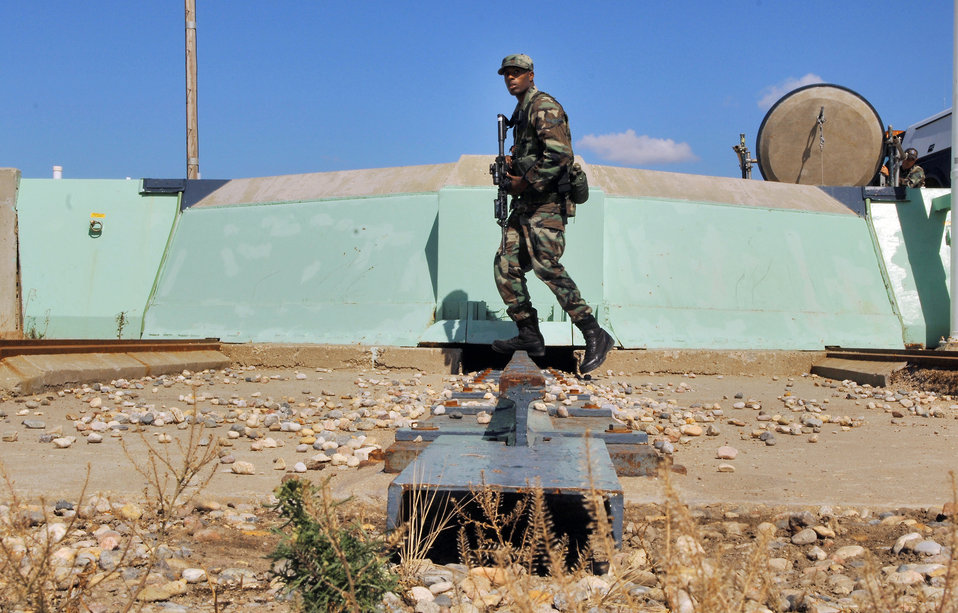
Working 'down in the hole'

Airman Jeremey Yancey patrols a Minuteman III intercontinental ballistic missile launch facility during the annual code change Aug. 25. The Airman is a security escort team member with the 791st Missile Security Forces Squadron at Minot Air Force Base, N.D. The green painted wall is the side of the 110-ton launcher closure door that protects the missile.